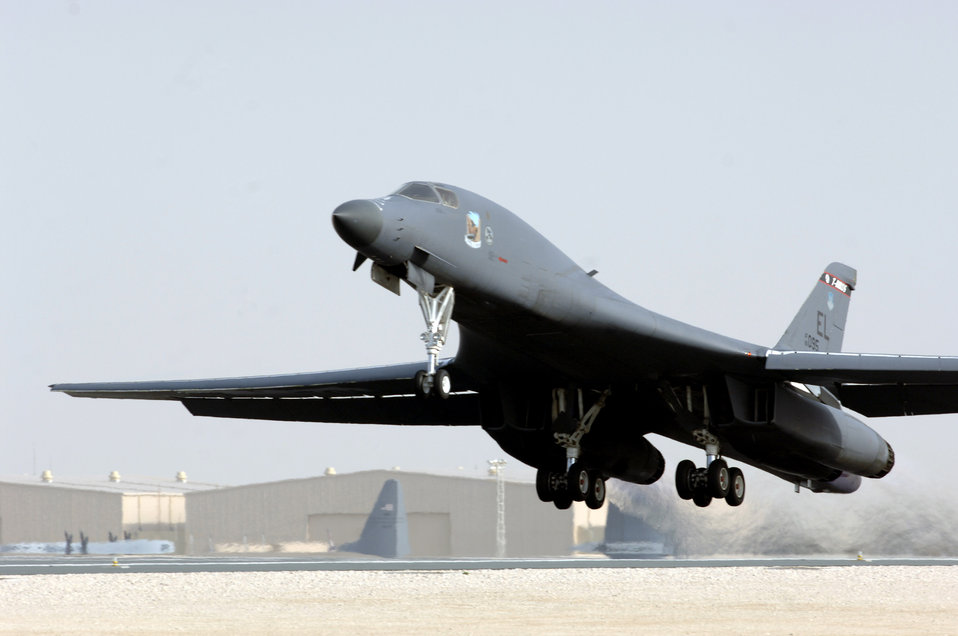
CENTAF airpower summary for March 14, 2007

An Air Force B-1B Lancer lifts off the runway at its Southwest Asia location enroute to a mission over Afghanistan. In recent weeks, the 34th Expeditionary Bomb Squadron has maintained a persistent presence in Iraq and Afghanistan to support increased operations.